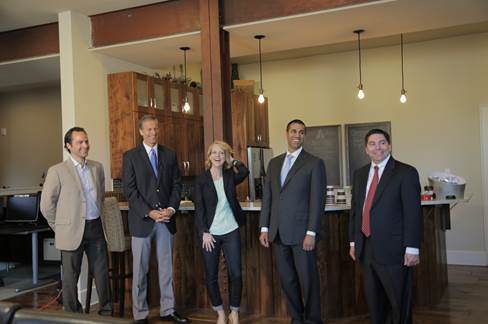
5.29.2014 Commissioners O’Rielly and Pai join Senator John Thune to visit Internet-enabled businesses in South Dakota

Commissioners O’Rielly and Pai join Senator John Thune to visit Sioux Falls, SD Internet-enabled businesses, May 29, 2014